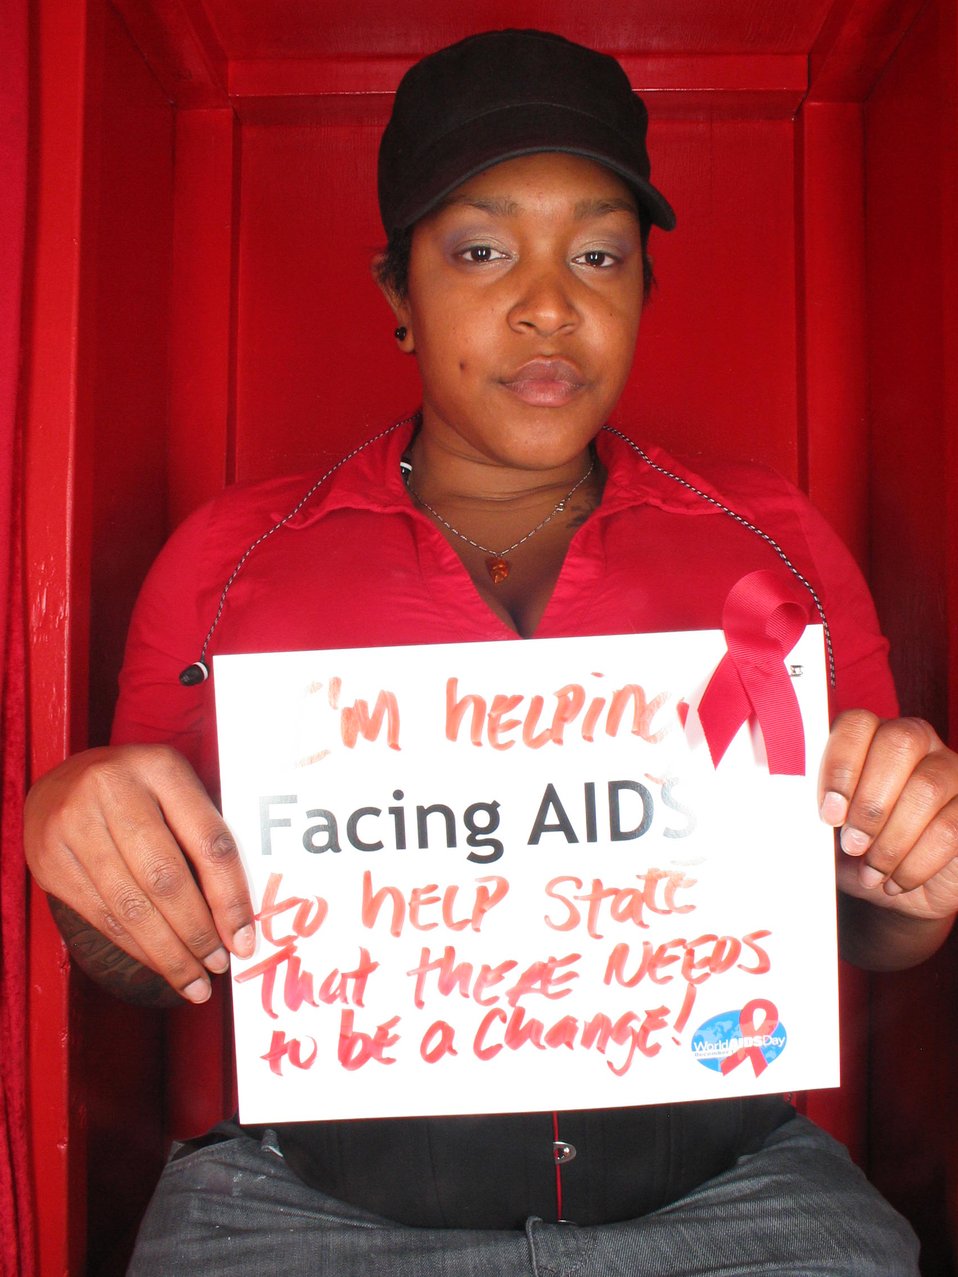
I am helping Facing AIDS to help state that there needs to be change!